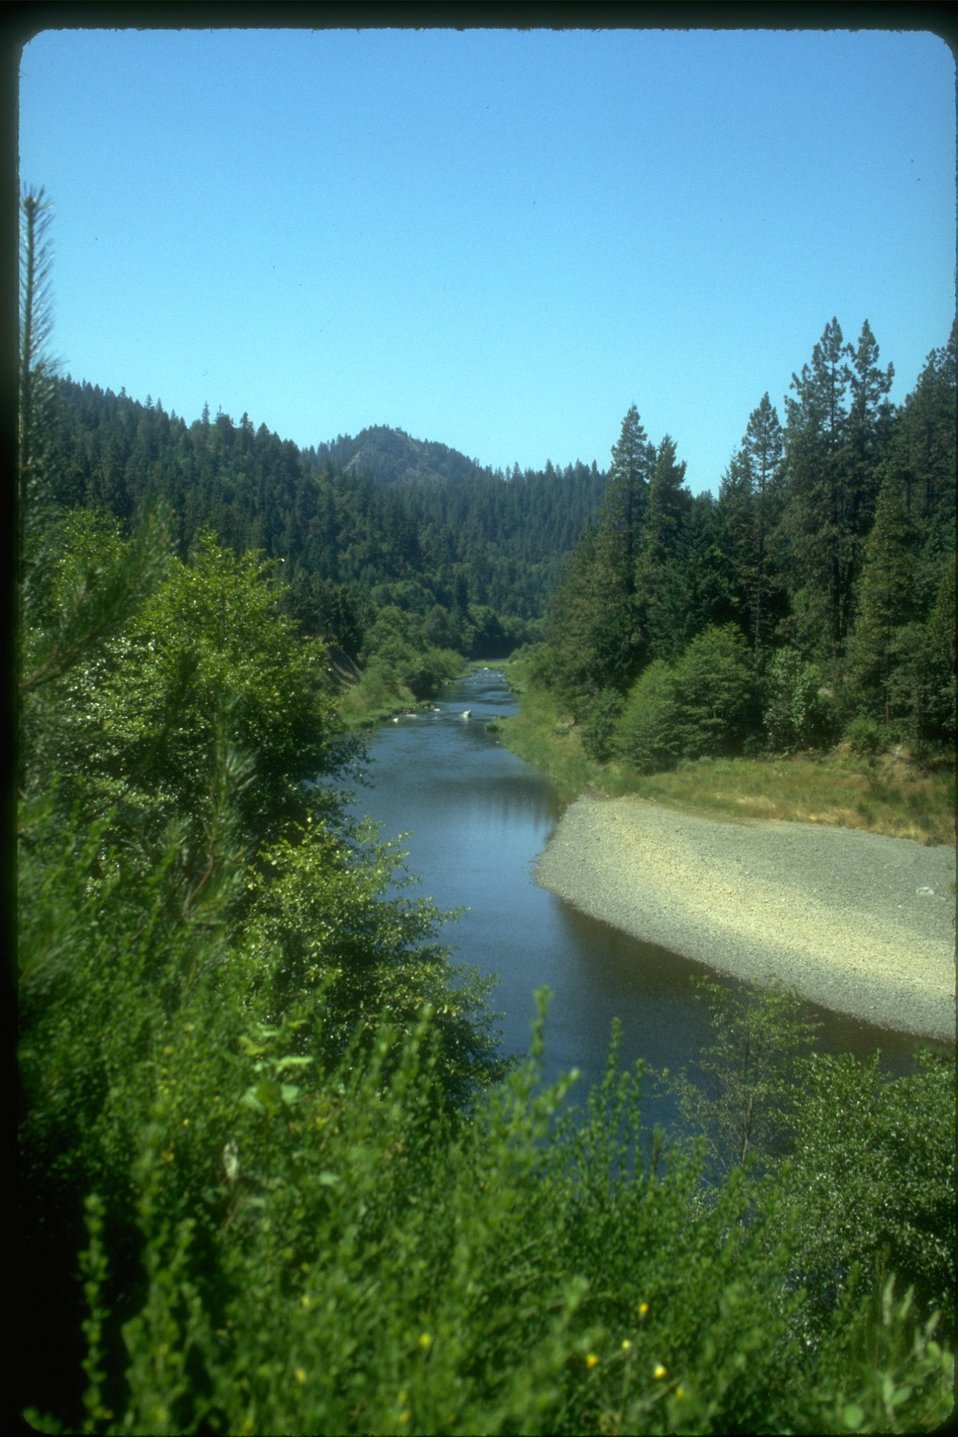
Along Cow Creek Back Country Byway, above Doe Creek looking down onto shore line and riparian area.